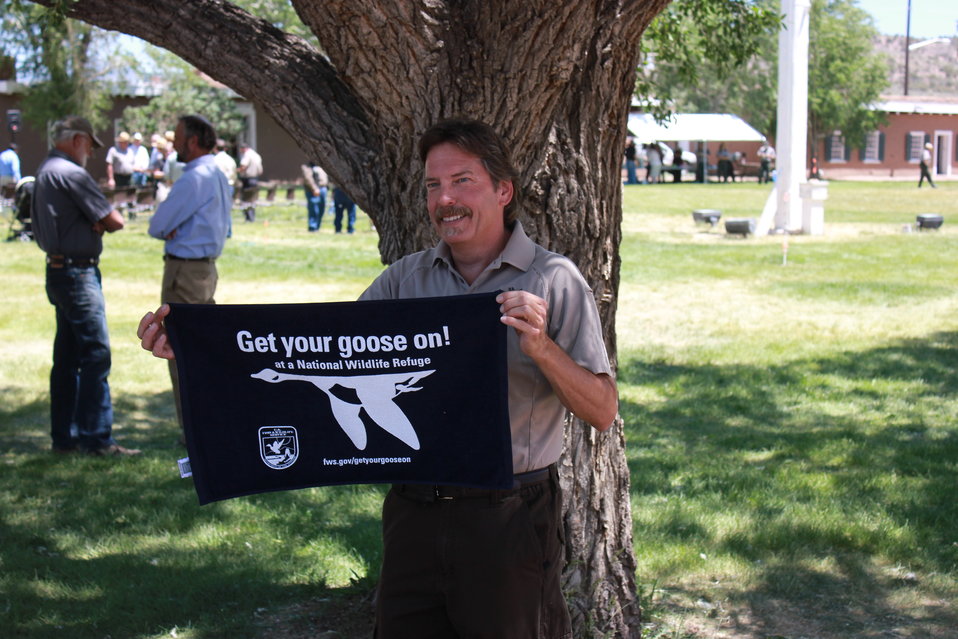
Get Your Goose On!